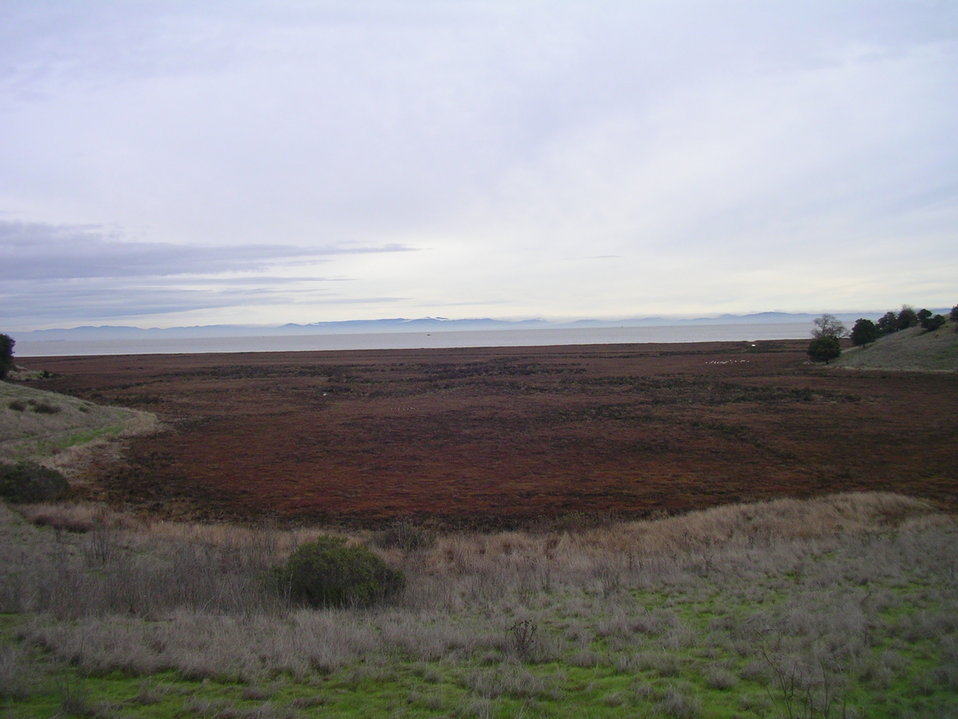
China Camp State Park

Only 8 percent of the San Francisco Bay’s original marshlands remaining viable today. Valary Bloom/USFWS